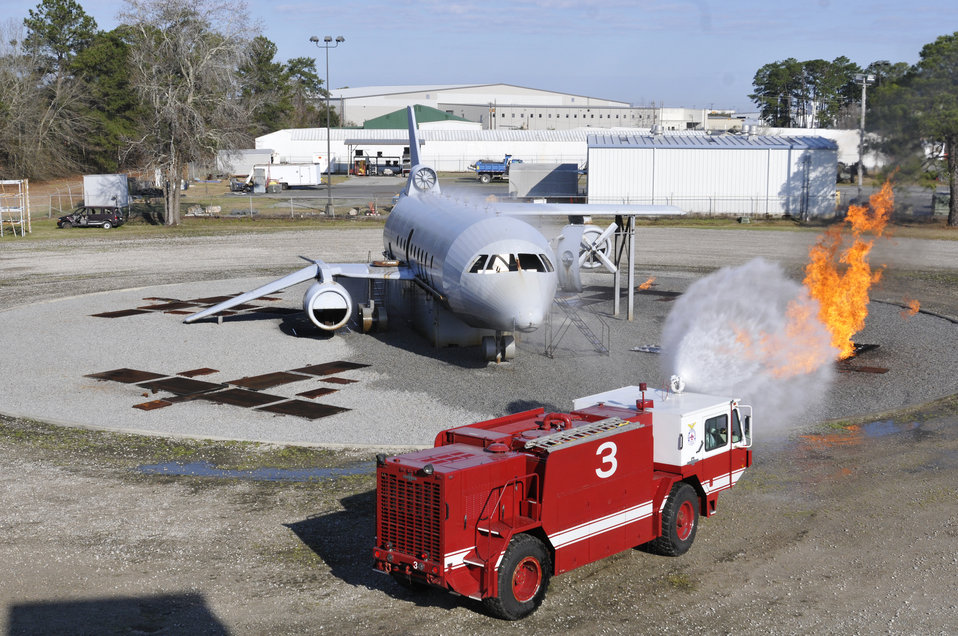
Crews train to fight fire

Firefighters from the 125th Fighter Wing at Jacksonville, Fla., and 71st Fighter Wing at Langley Air Force Base, Va, use the fire truck to extinguish a burn pit fire March 13, 2010, at the Combat Readiness Training Center in Savannah, Ga. The burn pit re-creates most scenarios of a real aircraft fire.